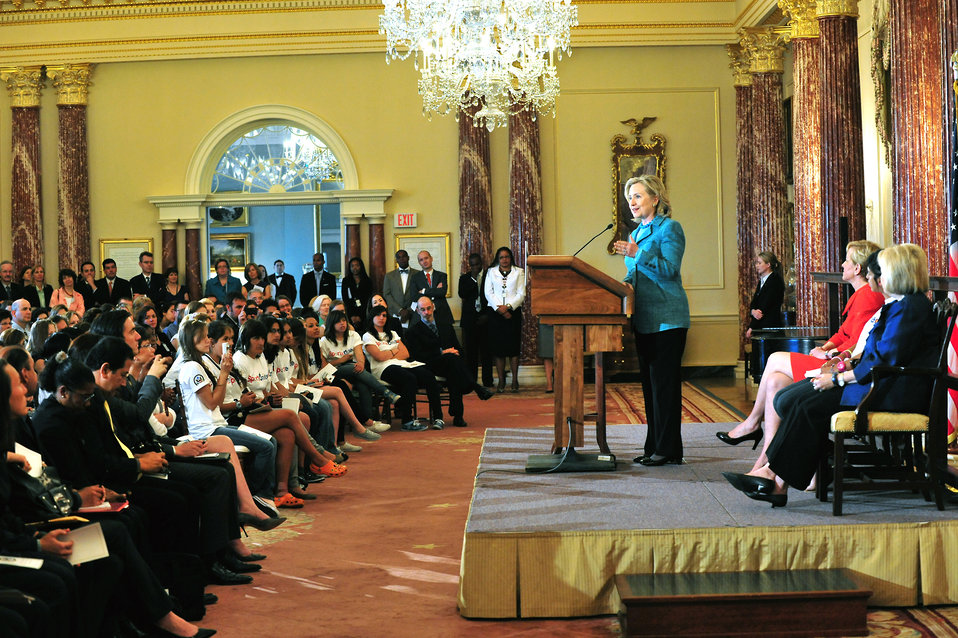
Secretary Clinton Launches the Women's World Cup Initiative and Marks the Kick-Off of the 40th Anniversary Year of Title IX

U.S. Secretary of State Hillary Rodham Clinton launches the Women's World Cup Initiative and marks the kick-off of the 40th Anniversary Year of Title IX, at the U.S. Department of State in Washington, D.C., on June 6, 2011.